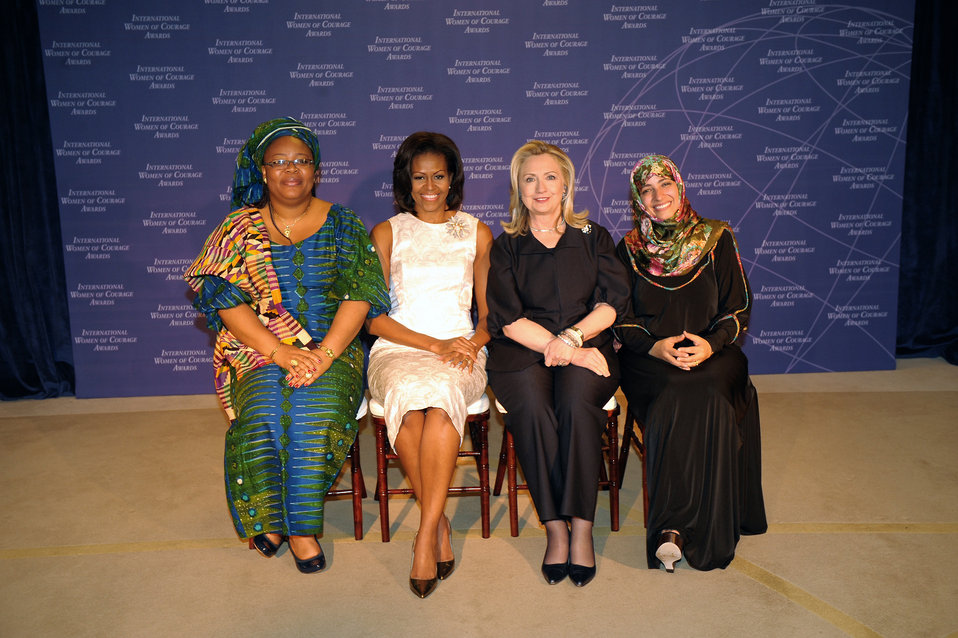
Secretary Clinton and First Lady Obama With 2011 Nobel Peace Prize Laureates Leymah Gbowee and Tawakkol Karman

U.S. Secretary of State Hillary Rodham Clinton, center right; and First Lady Michelle Obama, center left; pose for a photo with 2012 International Women of Courage (IWOC) Awards Ceremony special guests and 2011 Nobel Peace Prize Laureates, Leymah Gbowee, left; and Tawakkol Karman, right; at the U.S. Department of State in Washington, D.C., on March 8, 2012.